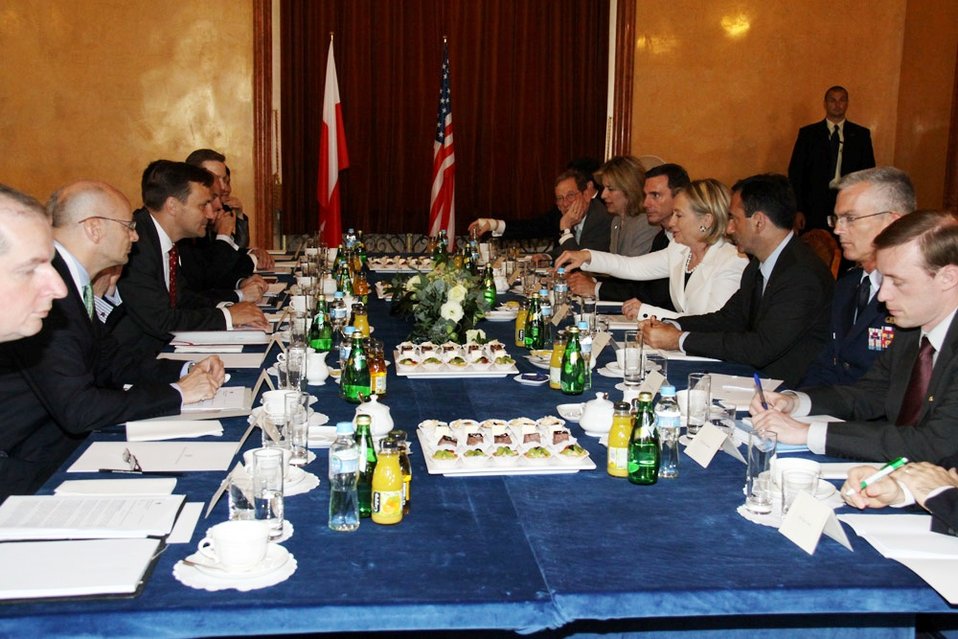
Polish Foreign Minister Radoslaw Holds a Bilateral Meeting With Secretary Clinton

Polish Foreign Minister Radoslaw Sikorski holds a bilateral meeting with U.S. Secretary of State Hillary Rodham Clinton in the City Hall of Krakow in Poland on July 3, 2010.